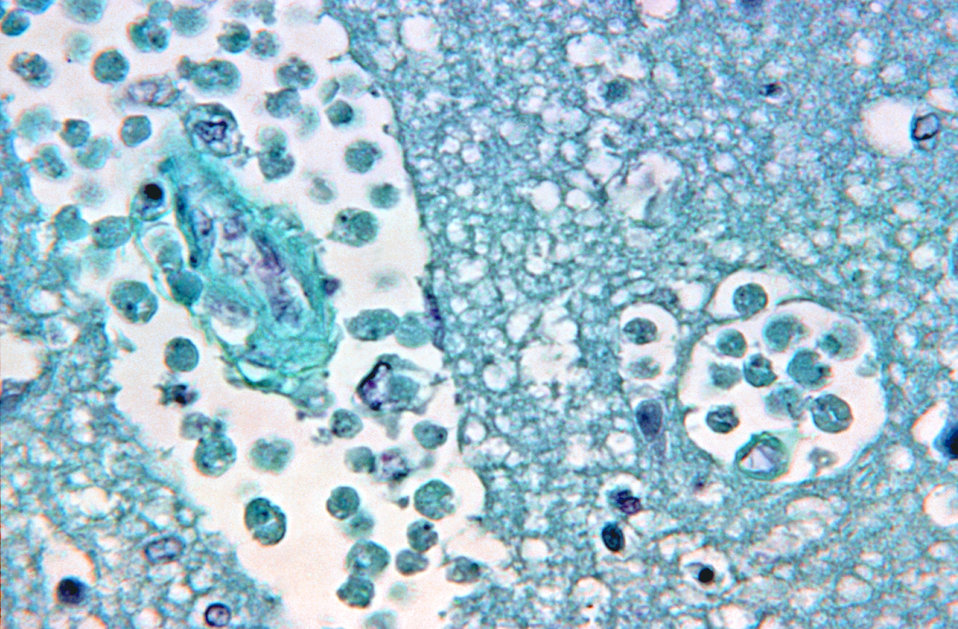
Magnified 500x, this photomicrograph of a brain tissue specimen depicts the cytoarchitectural changes associated with a free-living, Naegleria fowleri, amebic infection. When free-living amebae infect the brain or spinal cord, the condition is known as primary amebic meningoenceohalitis, or PAM. Free-living amebae belonging to the genera Acanthamoeba, Balamuthia, and Naegleria are important causes of disease in humans and animals, though only one specie of Naegleria, Naegleria fowleri, causes disease in humans.